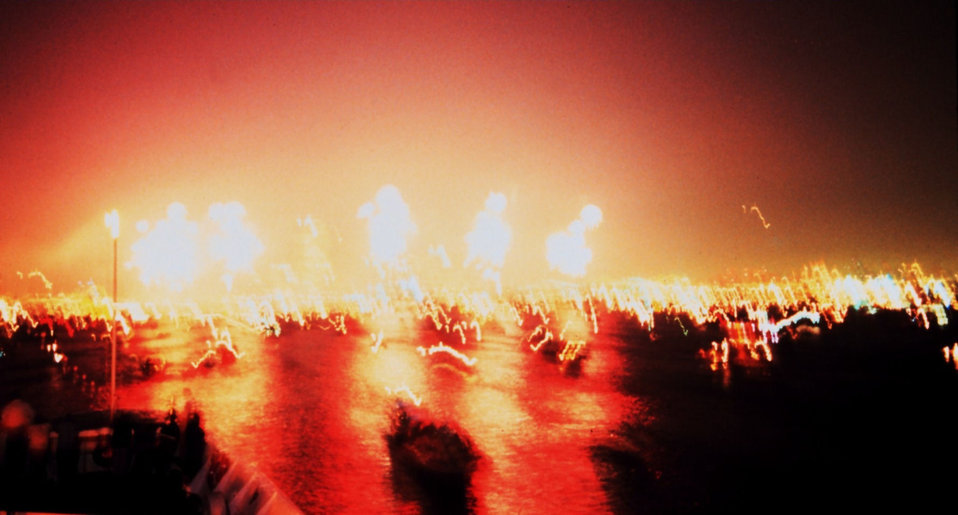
Fireworks over New York during Bicentennial celebration